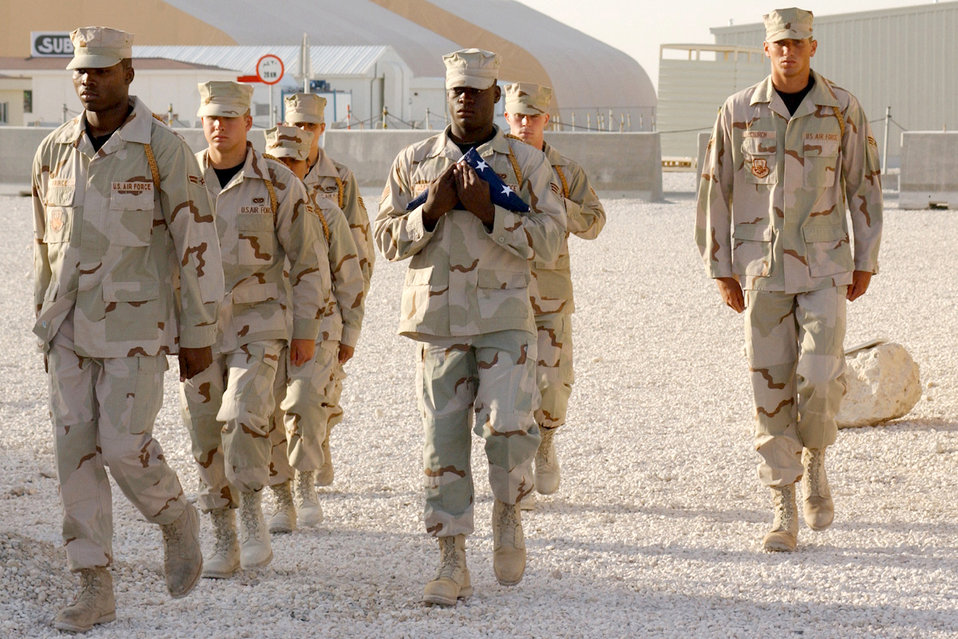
Airmen remember

MEMORIAL DAY -- Members of an honor guard team march into place for a Memorial Day ceremony at a forward-deployed location in Southwest Asia on May 31. The ceremony paid respect to those who were lost defending the United States.